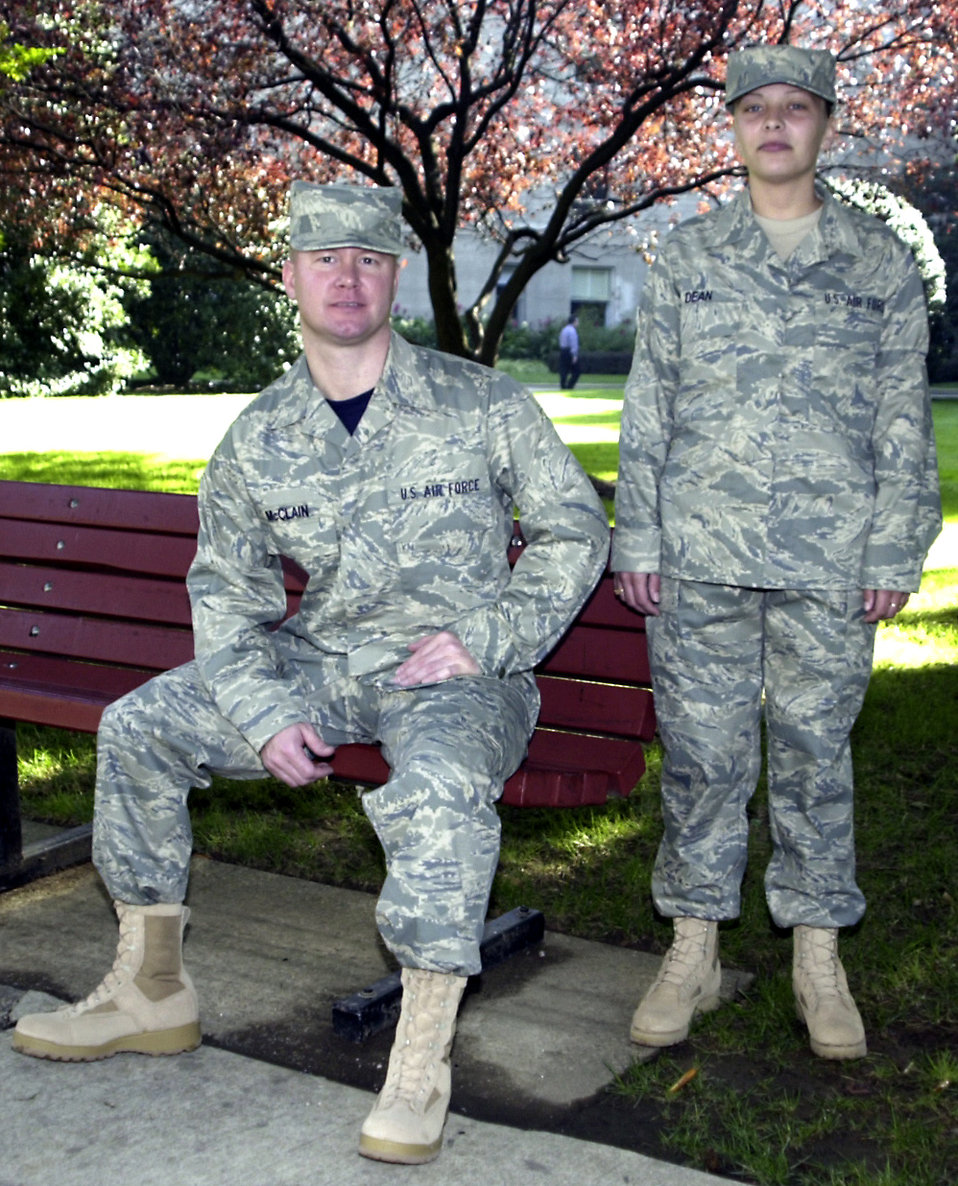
Air Force finalizes new utility uniform

WASHINGTON -- Air Force officials released photos of the latest version of the proposed Air Force utility uniform. Special operations and survival, evasion, resistance and escape Airmen will conduct a limited wear test of the new design at Eglin Air Force Base, Fla., Hurlburt Field, Fla., and Fairchild AFB, Wash., in June.